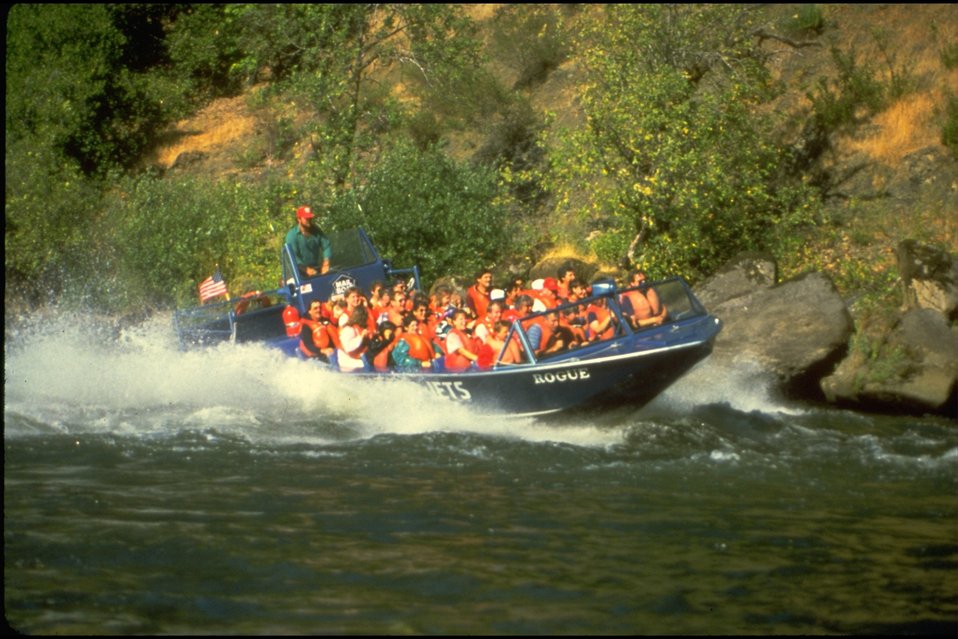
Rogue River - Near Watson Creek. Commercial Jetboat from Gold Beach, wild section.